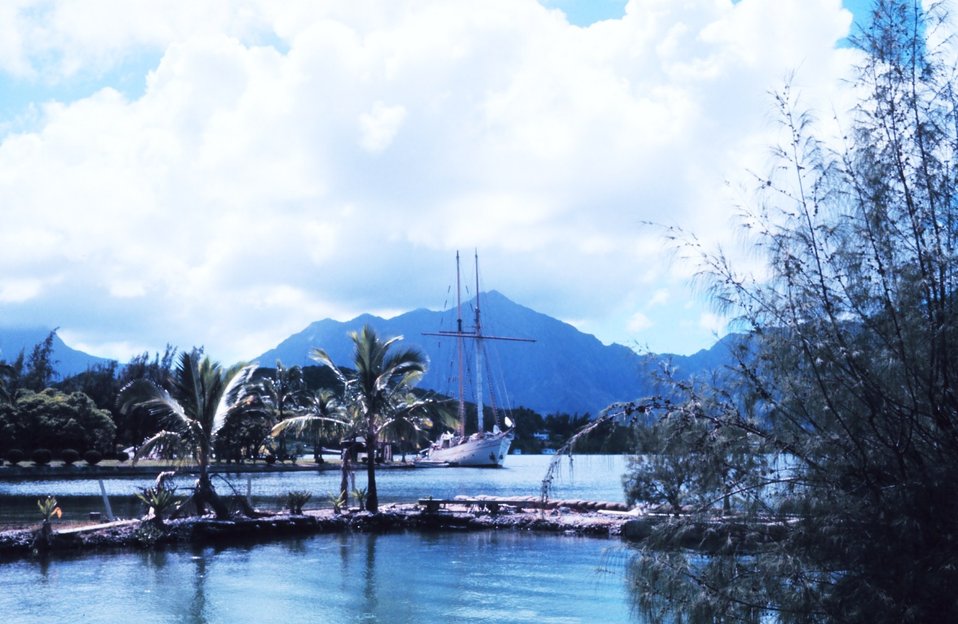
Beginning point of trip to Fanning Island